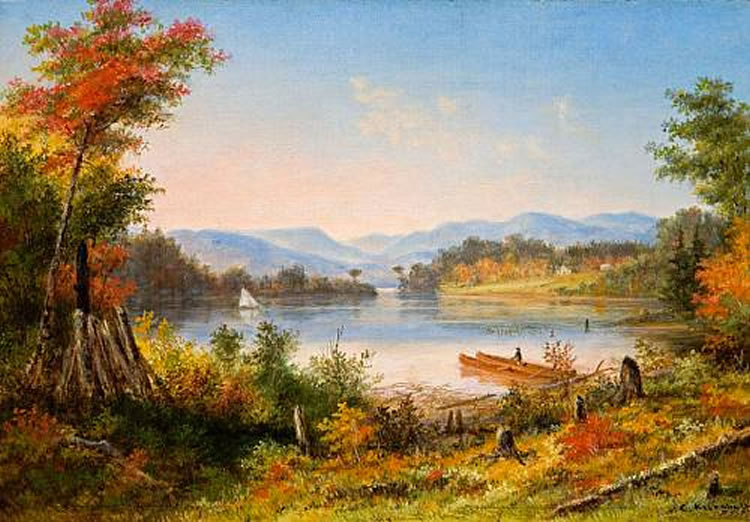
The Narrows, Lake St. Charles, oil painting by Cornelius Krieghoff, 1863, 9 x 13 in.